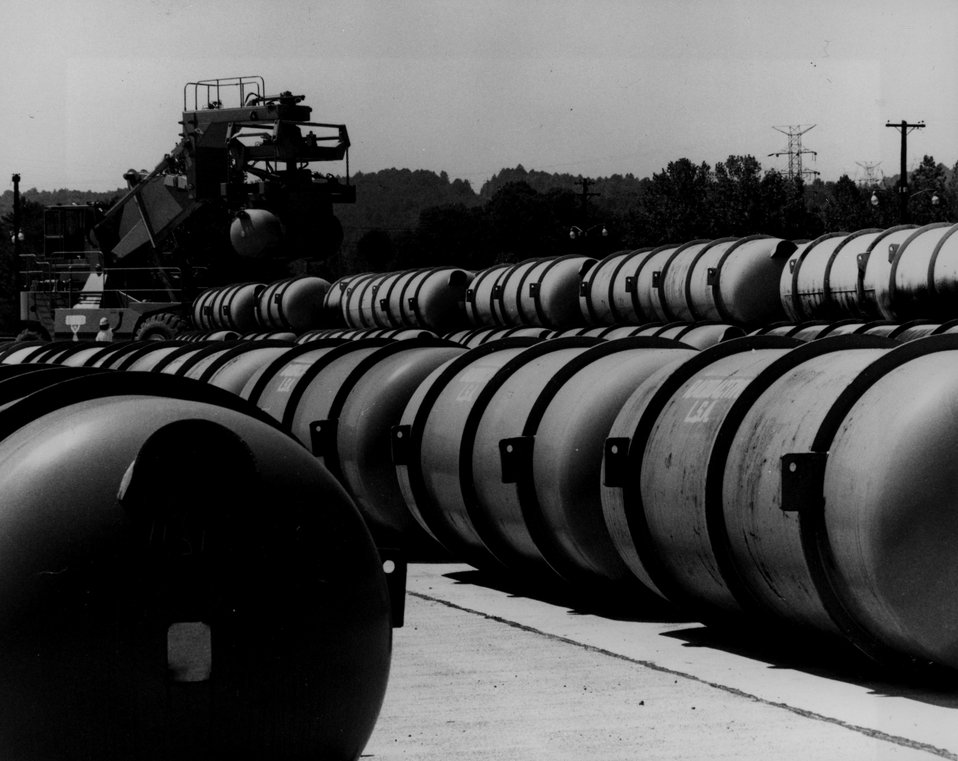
Uranium enrichment through gaseous diffusion. The large tanks weigh 10 tons and contain feed material, uranium hexaflouride, for the enrichment process carried out in the ERDA's gaseous diffusion plant at Oak Ridge, Tennessee; Pudacah, Kentucky and Portsmouth, Ohio. c. 1977